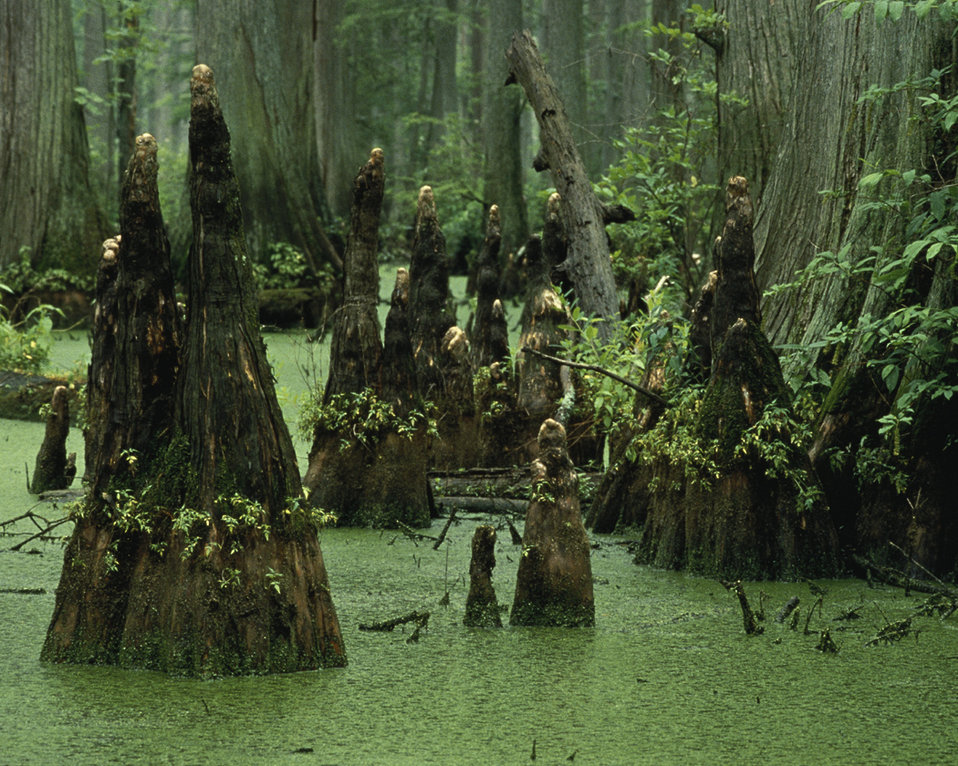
cypress knees

Cypress Creek National Wildlife Refuge, IL